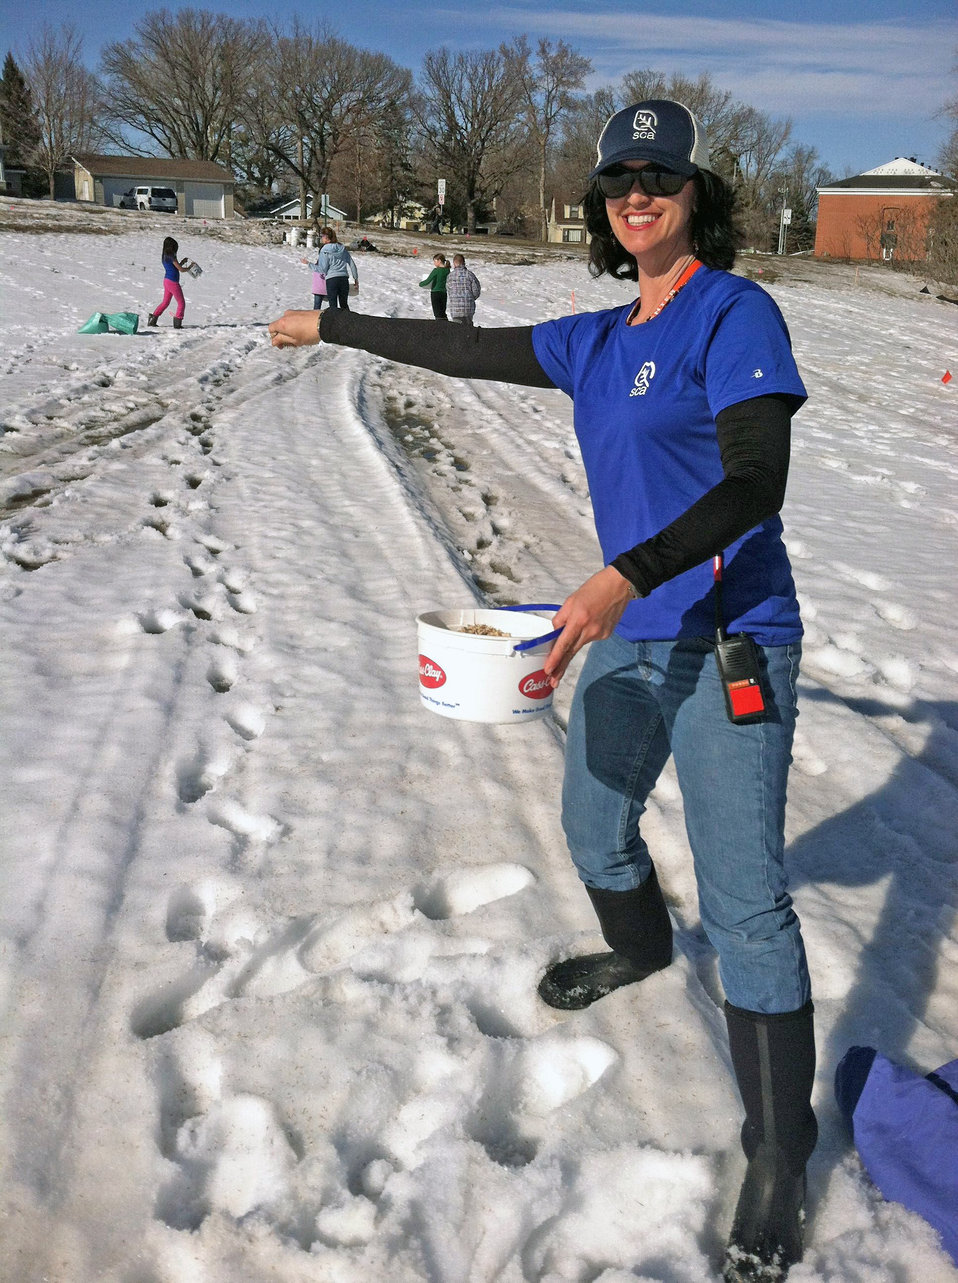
Sowing Seeds

Student Conservation Association intern Andrea Powell participated in her first prairie restoration at Kennedy Secondary School in Fergus Falls, Minnesota. They don't do much snow seeding where she is from in Florida.